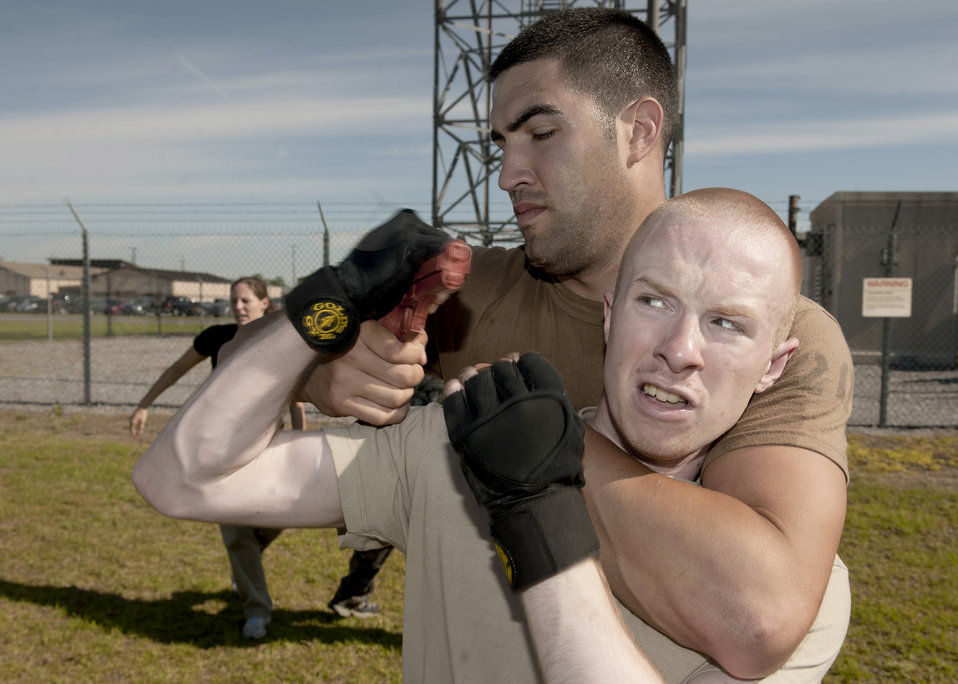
Krav Maga training gives Airmen the combat edge

Airman Jason Crawford breaks a choke hold from Senior Airman Kyle Simone while attempting to disarm him during Krav Maga training recently at Moody Air Force Base, Ga. One of the techniques taught to the Airmen during the training was to successfully disarm an attacker without being harmed. Airman Crawford is assigned to the 823rd Base Defense Squadron, and Airman Simone is assigned to the 23rd Security Forces Squadron.